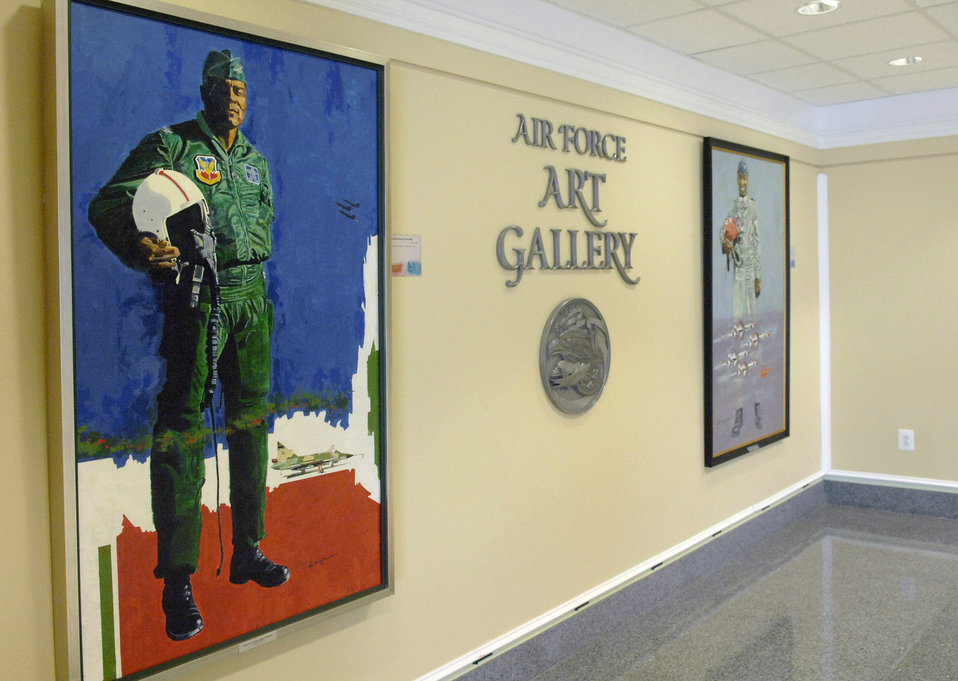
Roy LaGrone art

Examples of the artwork unveiled at the Roy LaGrone art exhibit at the AF Art Gallery Feb 15, 2011, in the Pentagon. Mr. LaGrone was a Tuskegee Airman before pursuing a career in art.